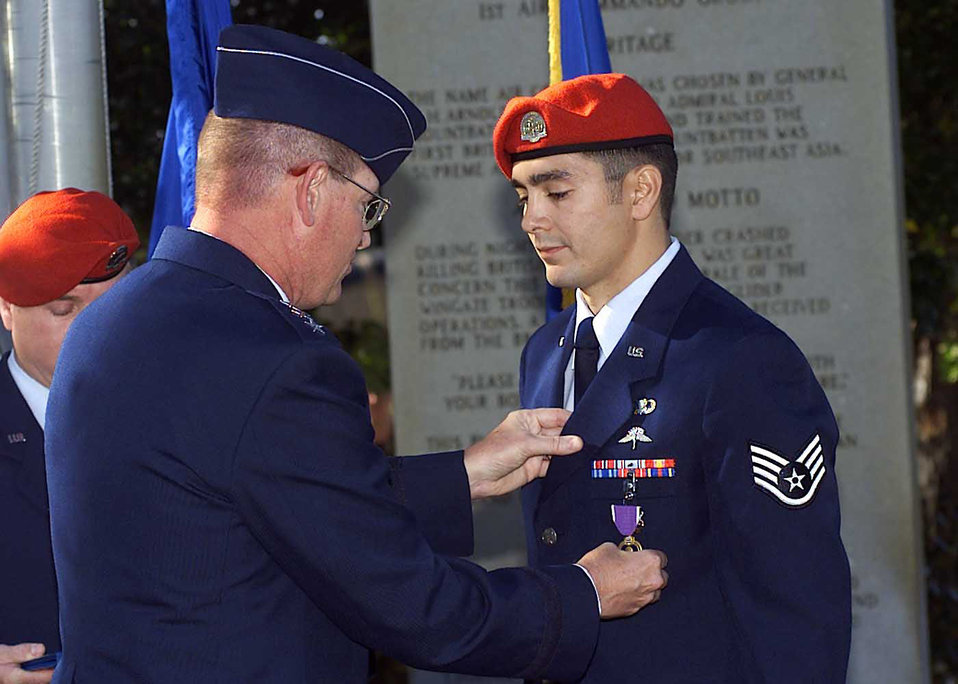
Enduring Hero

HURLBURT FIELD, Fla. -- Lt. Gen. Maxwell C. Bailey, commander of Air Force Special Operations Command, pins on a Purple Heart to Air Force Staff Sgt. Mike, an Air Force Special Operations Command combat controller, for injuries received in Operation Enduring Freedom combat. Mike from the 23rd Special Tactics Squadron at Hurlburt Field was among five U.S. Special Operators injured during combat actions at Mazar-e-Sharif, in northern Afghanistan, Nov. 26, 2001. Mike suffered ruptured eardrums and a scratched cornea when a U.S. bomb struck near his position.